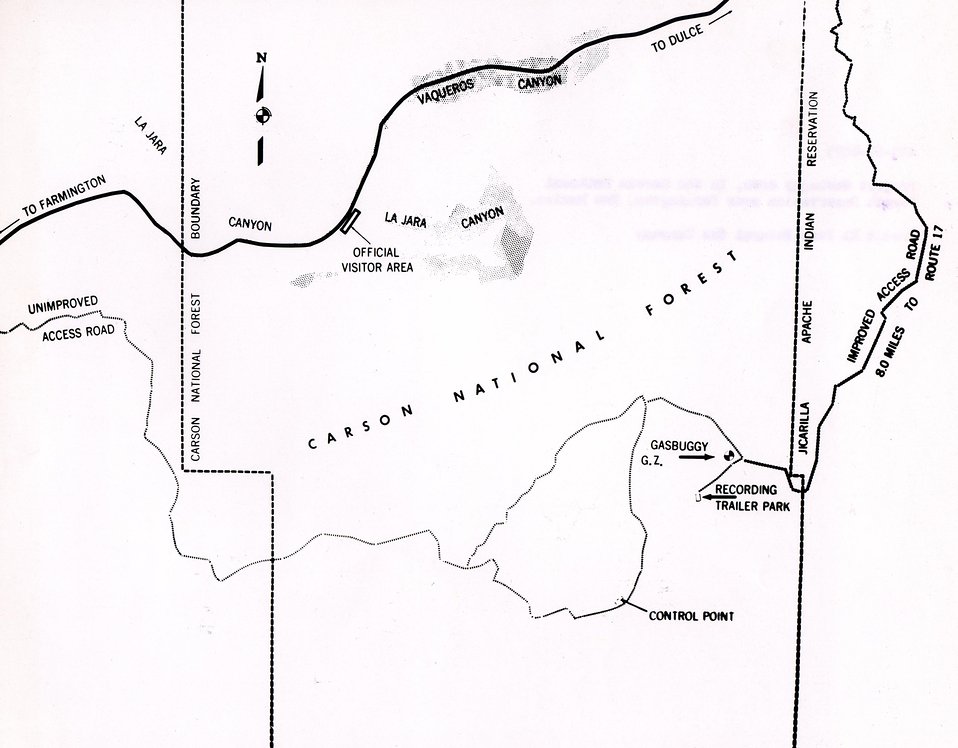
Project Gasbuggy area, in the Carson National Forest Reservation near Farmington, New Mexico.